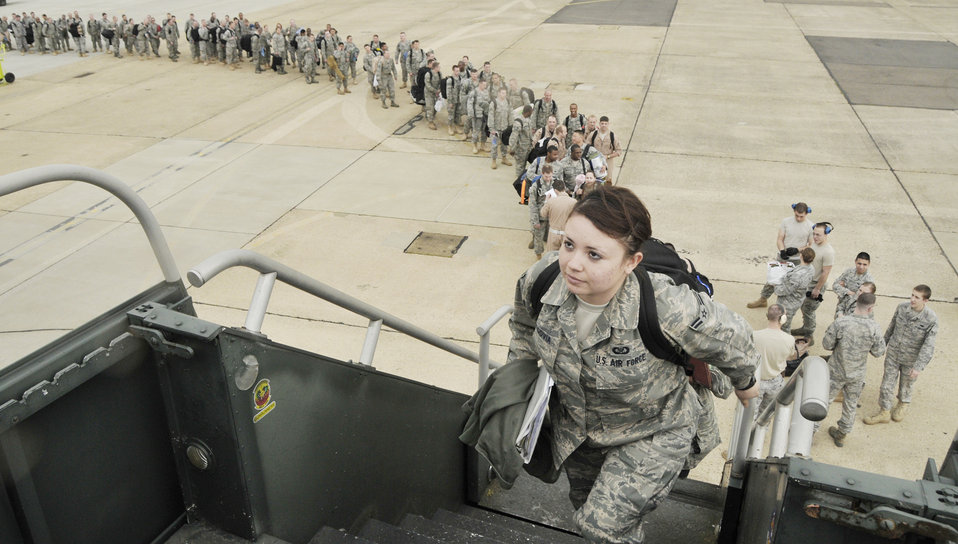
On our way

Airman 1st Class Claudia Segovia boards a Boeing 737 en route to Bagram Airfield, Afghanistan, in support of Operation Enduring Freedom. Airman Segovia is assigned to the 492nd Fighter Squadron at Royal Air Force Lakenheath, England.